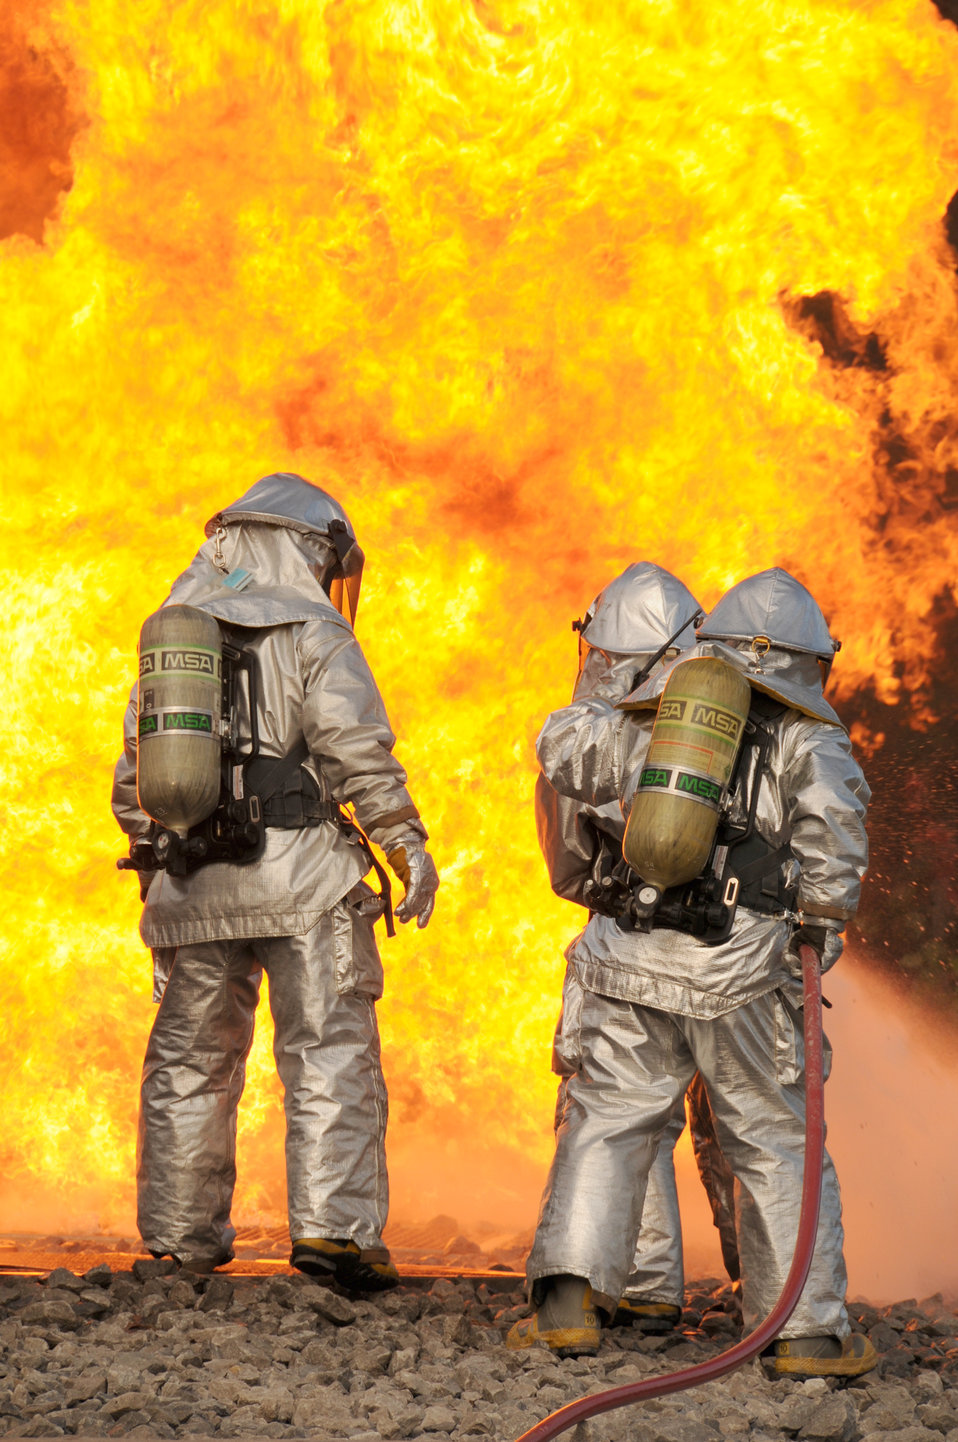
Firefighters sharpen their skills

Firefighters from the Ohio Air National Guard's 180th Fighter Wing extinguish an aircraft fire during a training exercise Oct. 16, 2010, at the Phelps Collins Combat Readiness Training Center in Alpena, Mich. The Airmen are doing annual training to prepare them for various rescue situations.